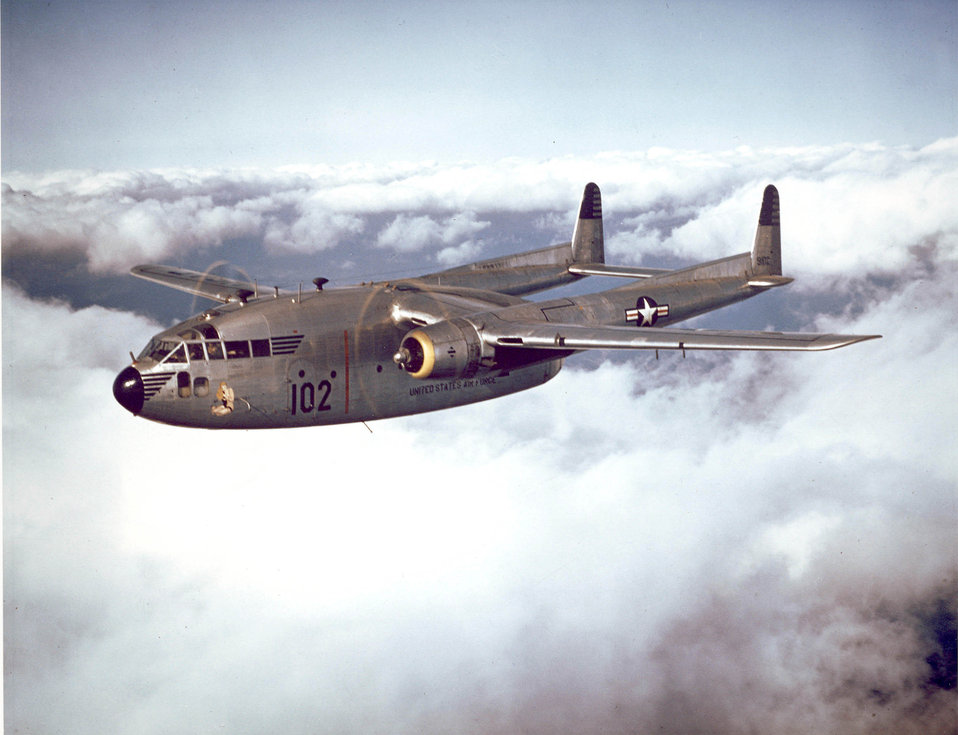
Fairchild C-119

1950's -- The 314th Troop Carrier Group C-119 Flying Boxcars do not start out for the